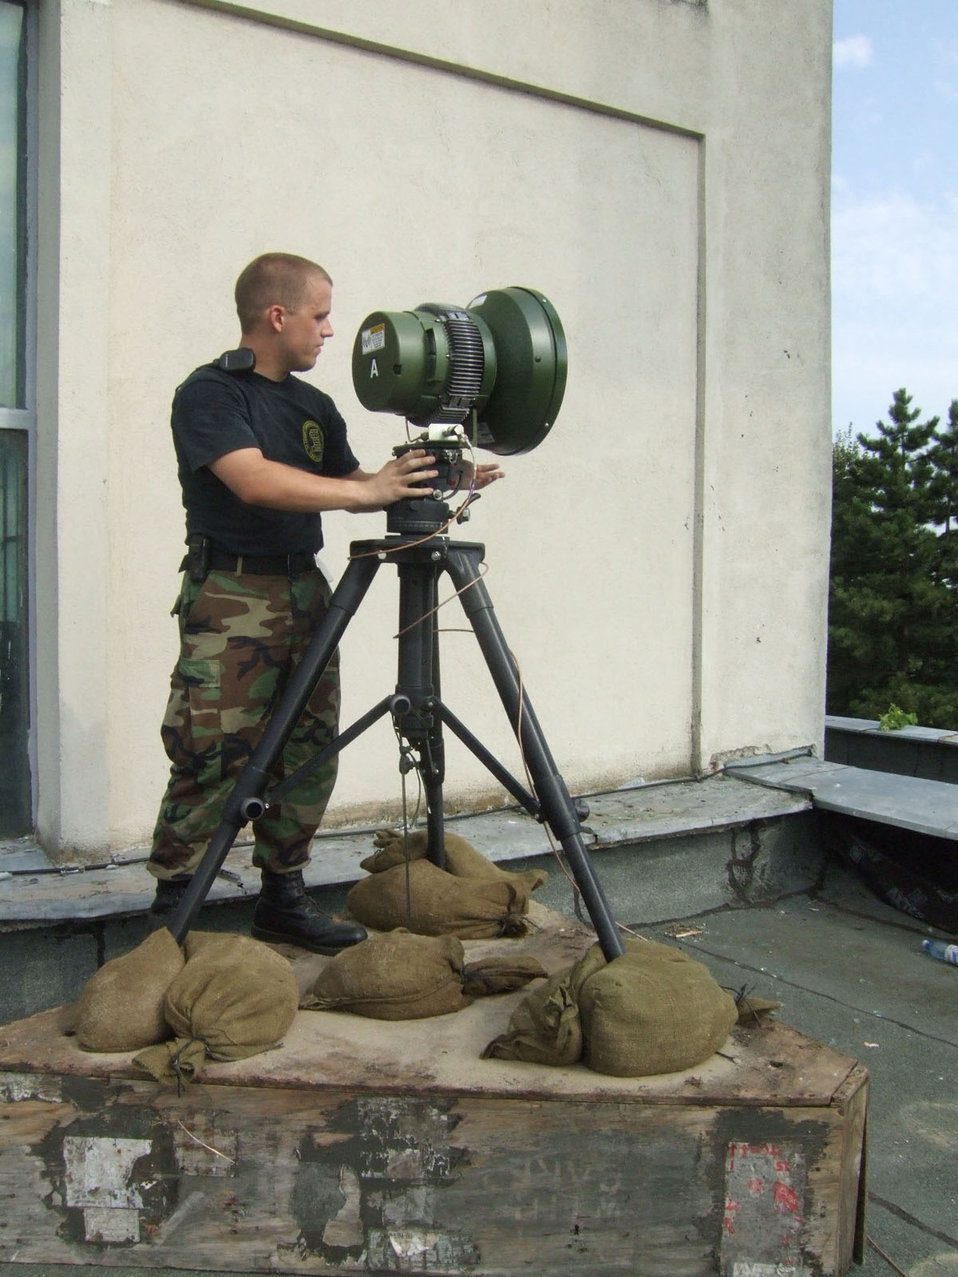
Comm team keeps Viper Lance participants connected

Airman 1st Class Brent Showalter aims a directional wireless antenna Aug. 6 to establish a link to a building roughly three quarters of a mile away during Exercise Viper Lance 2006. The exercise is being staged from Mihail Kogalniceanu Air Base, Romania. Airman Showalter is a radio maintenance technician with the 1st Combat Communication Squadron from Ramstein Air Base, Germany.